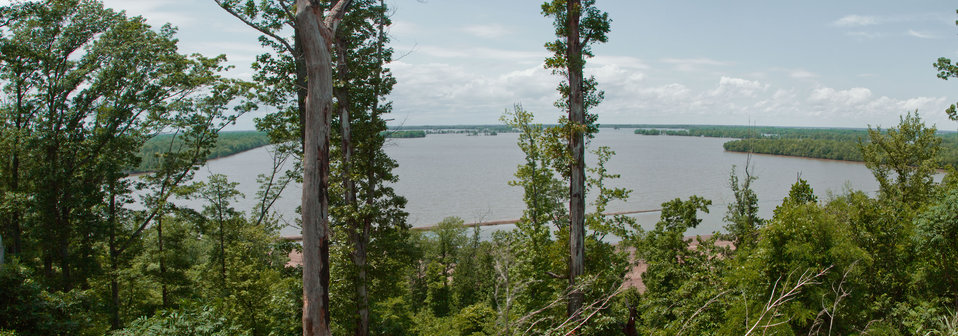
Virtual panorama of the westward overlook view from Porters Gap Rd, near Highway 88 W in Lauderdale County, TN, on Saturday, May 21, 2011. All water seen flooded farm land that normally produce cotton, soybeans, corn, wheat and some cattle.